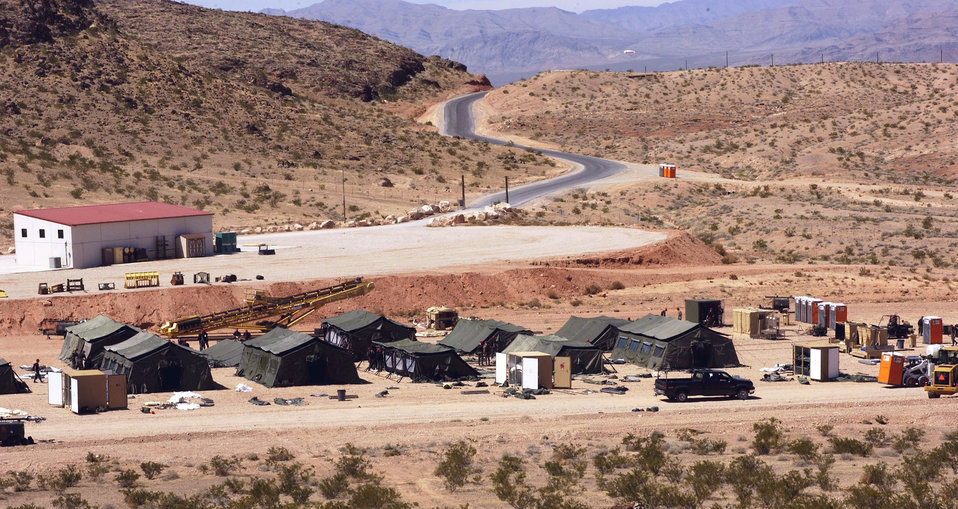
Red Horse in action

Airmen set up facilities during a bare-base build-up exercise at Nellis Air Force Base, Nev., April 8 to 9, 2006. The operation included beddown and construction operations for 120 Airmen. The camp had a mobile field kitchen with generators, reverse-osmosis water purification unit and field latrine equipment. The Airmen are with the 555th Red Horse Civil Engineer Squadron.